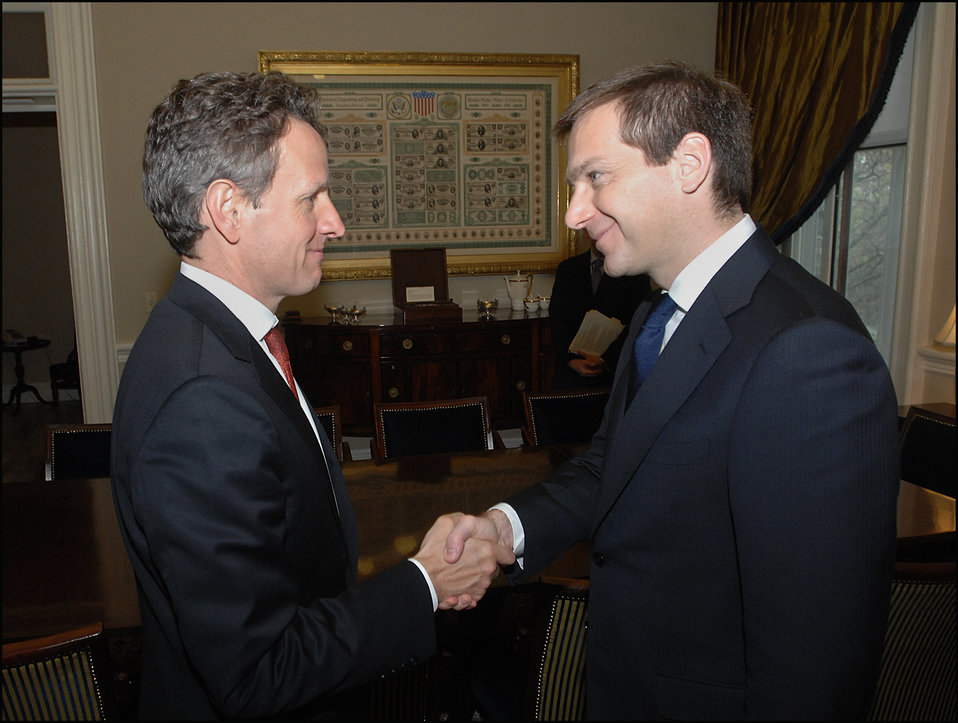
Hungarian Prime Minister Gordon Bajnai

On December 4, 2009, Secretary Geithner met with Hungarian Prime Minister Gordon Bajnai.